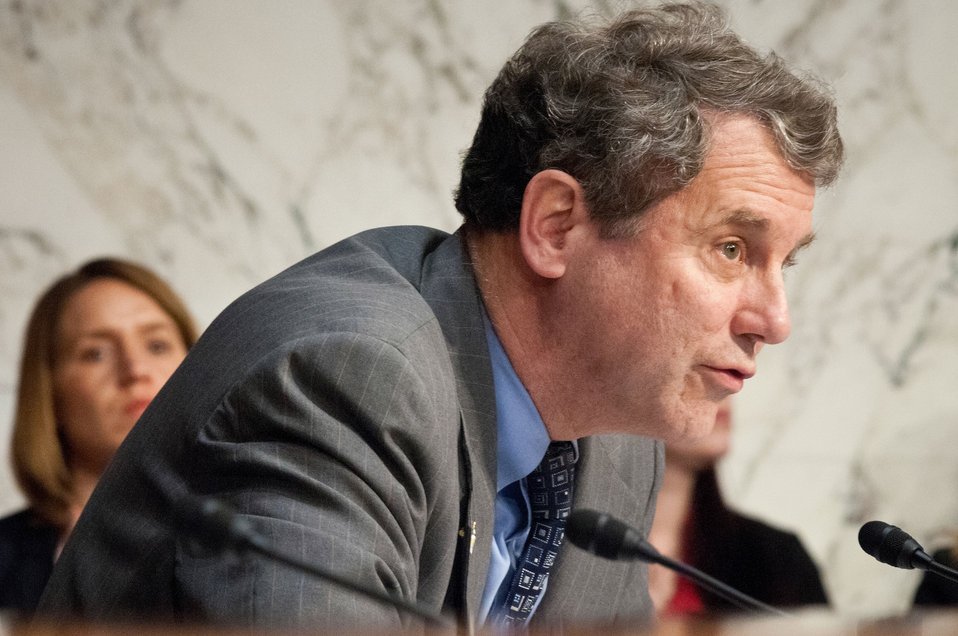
Senator Sherrod Brown (OH) poses a question to Agriculture Secretary Tom Vilsack during Secretary Vilsack’s testimony on “Healthy Food Initiatives, Local Production and Nutrition,” before the Senate Agriculture Committee on Wednesday, March 7, 2012 in Washington, D.C.